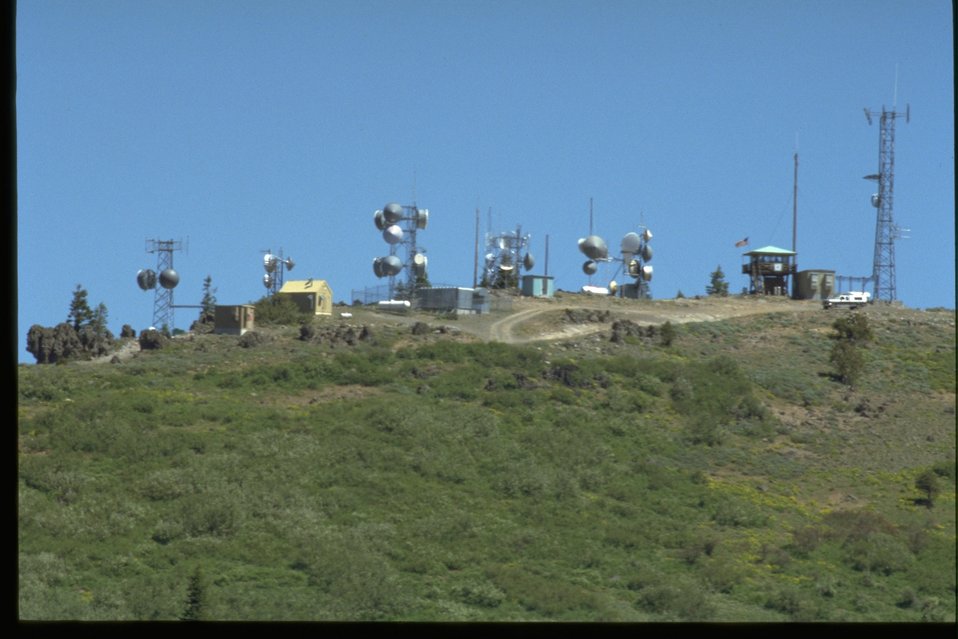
Communications equipment on Soda Mountain Summit.